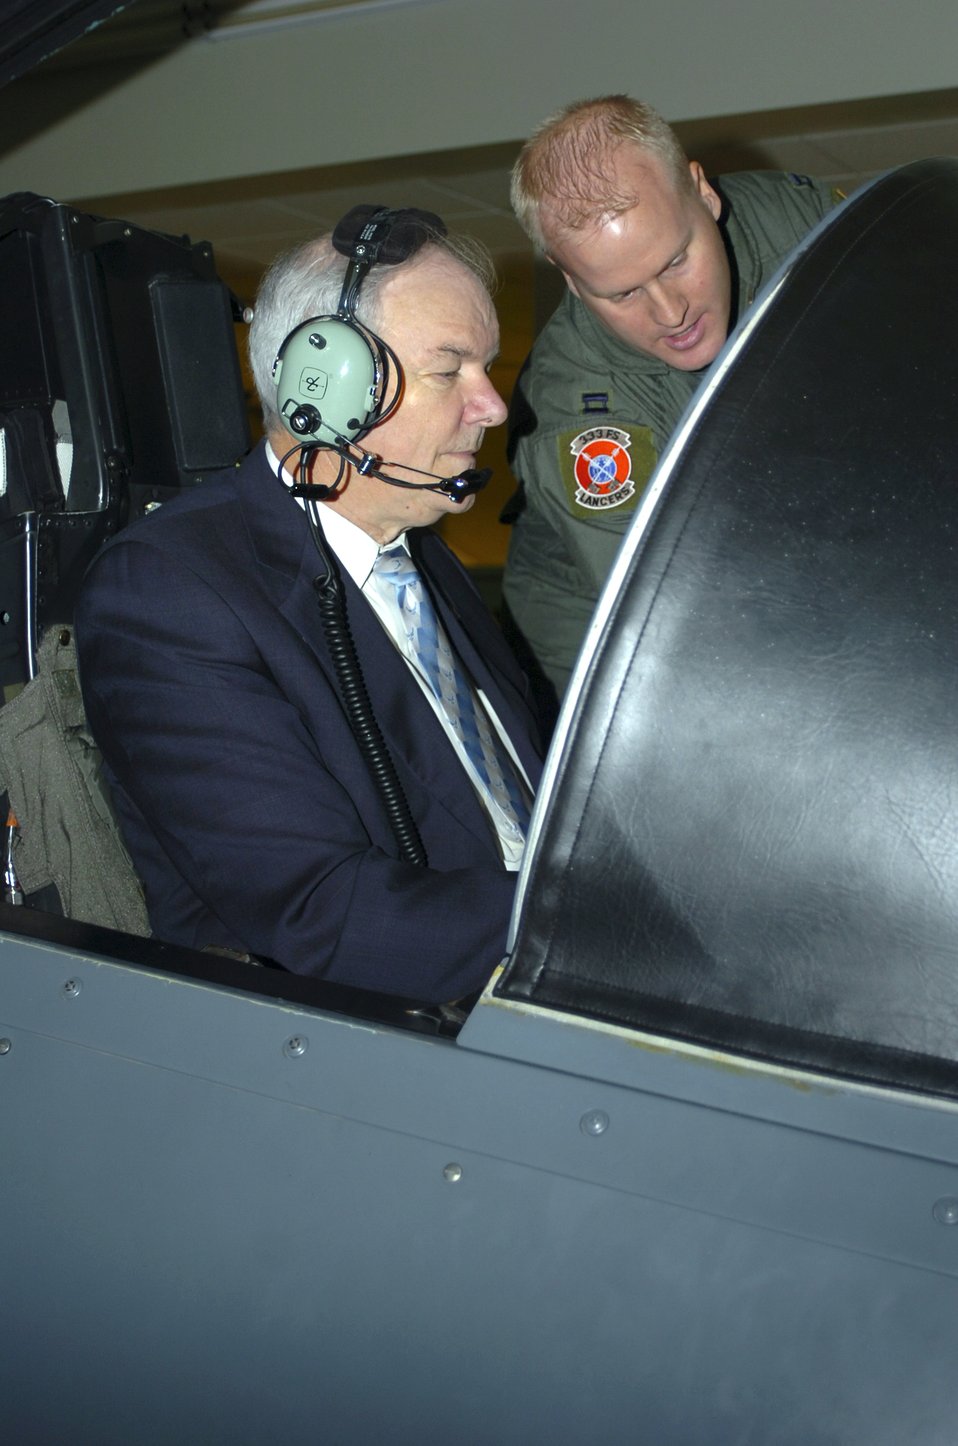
SECAF visits Seymour Johnson AFB

Secretary of the Air Force Michael W. Wynne gets a chance to